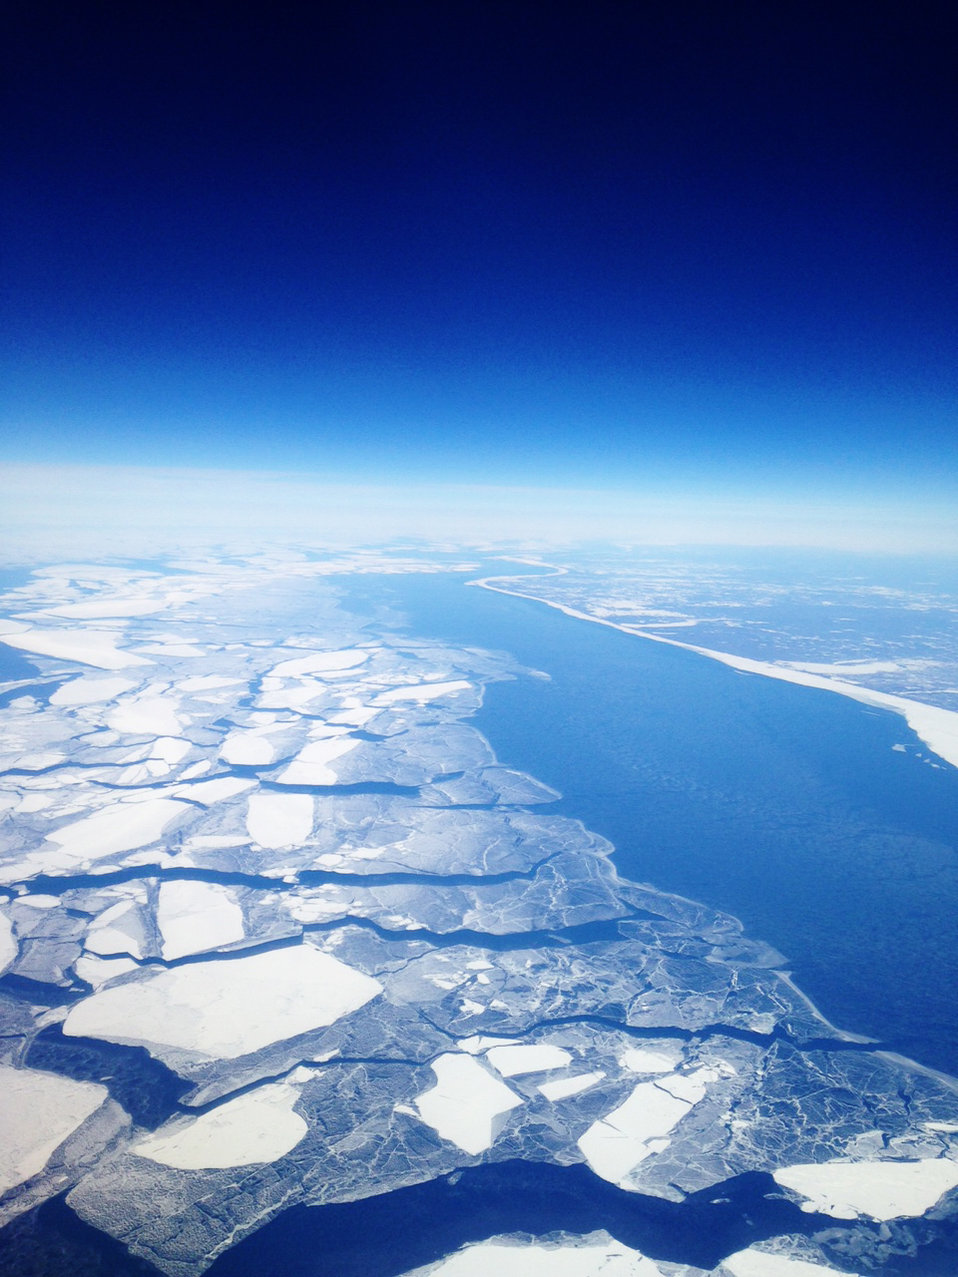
Ice on Lake Michigan

March 2014 - Ice covers over 91% of the Great Lakes.

Southeast Lake Michigan at 30,000 feet by Charlie Wooley/USFWS.